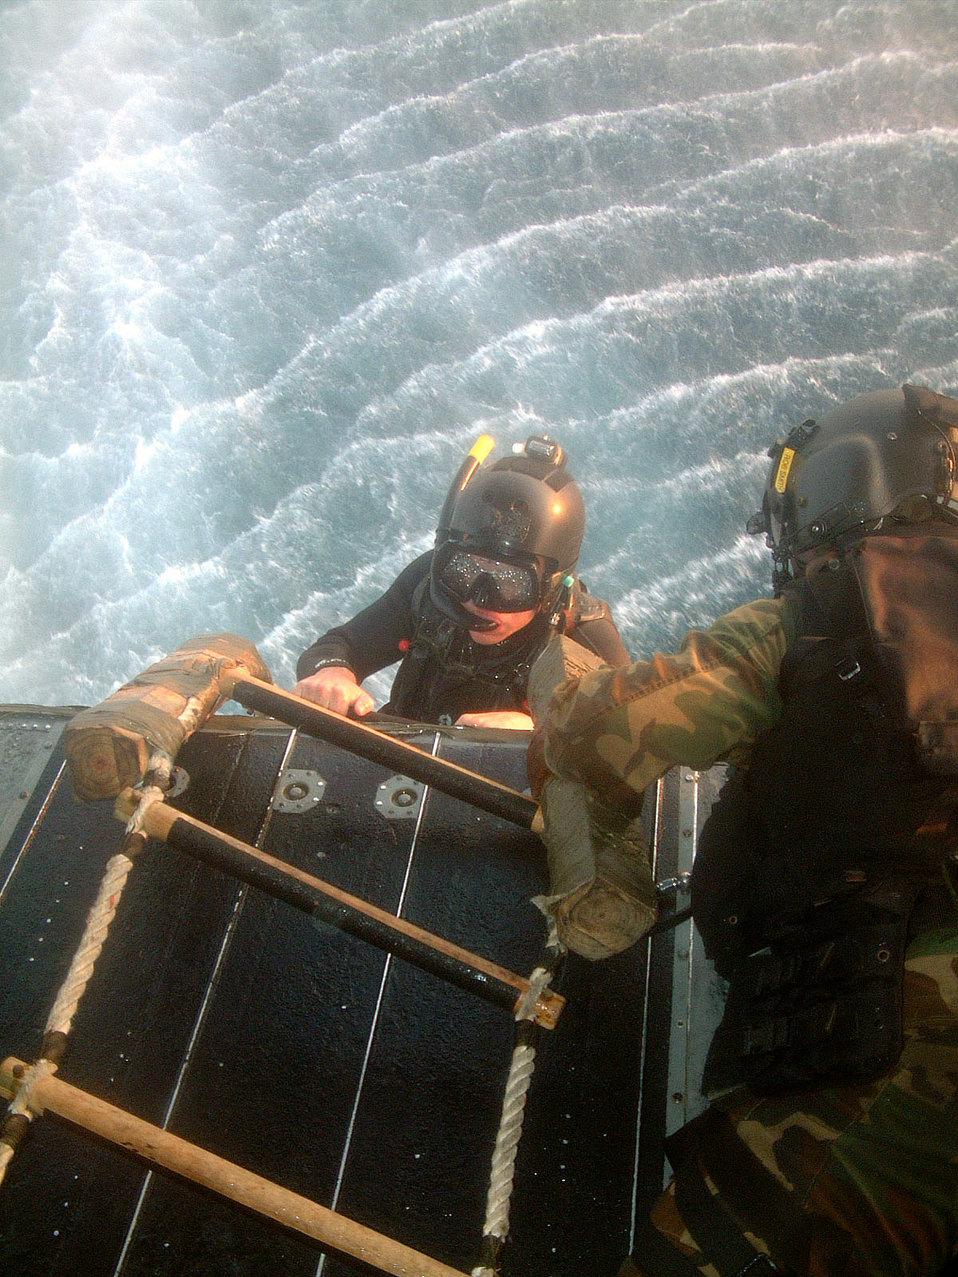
Splish splash

CLARK AIR BASE, Philippines (AFPN) -- Senior Airman Luke Naughton climbs out of Subic Bay during recent pararescue training with Filipino forces. The training was part of Exercise Balance Piston 03-5 and was aimed at increasing the interoperability of the two nations' armed forces. The pararescuemen operated from an MH-47 Chinook helicopter flown by the U.S. Army's 160th Special Operations Aviation Regiment. Naughton is assigned to the 320th Special Tactics Squadron at Kadena Air Base, Japan.